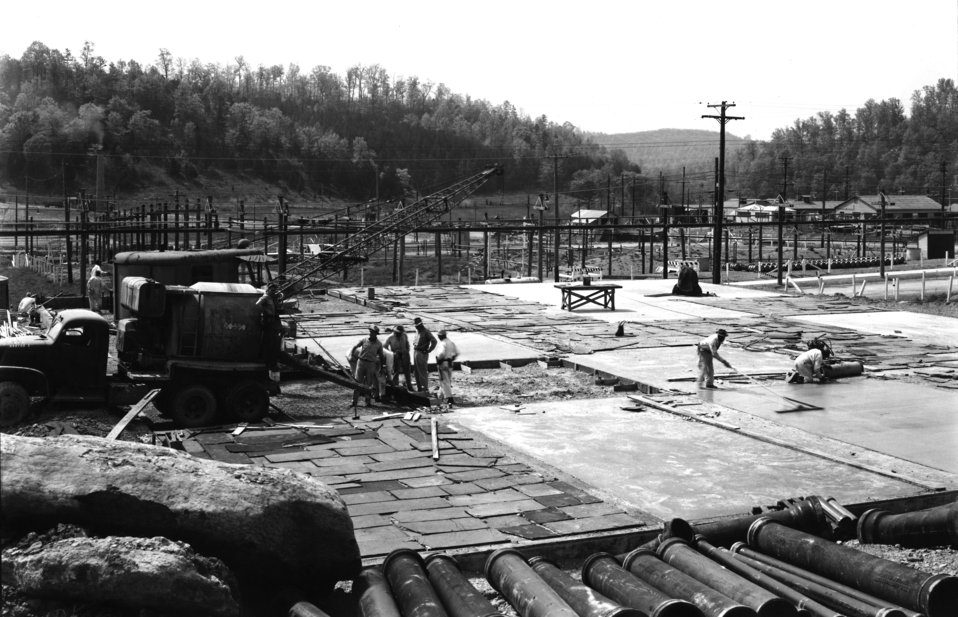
Early Construction ORNL 1943 Oak Ridge

X-10-18 DOE photo Ed Westcott 1943 Oak Ridge Tennessee